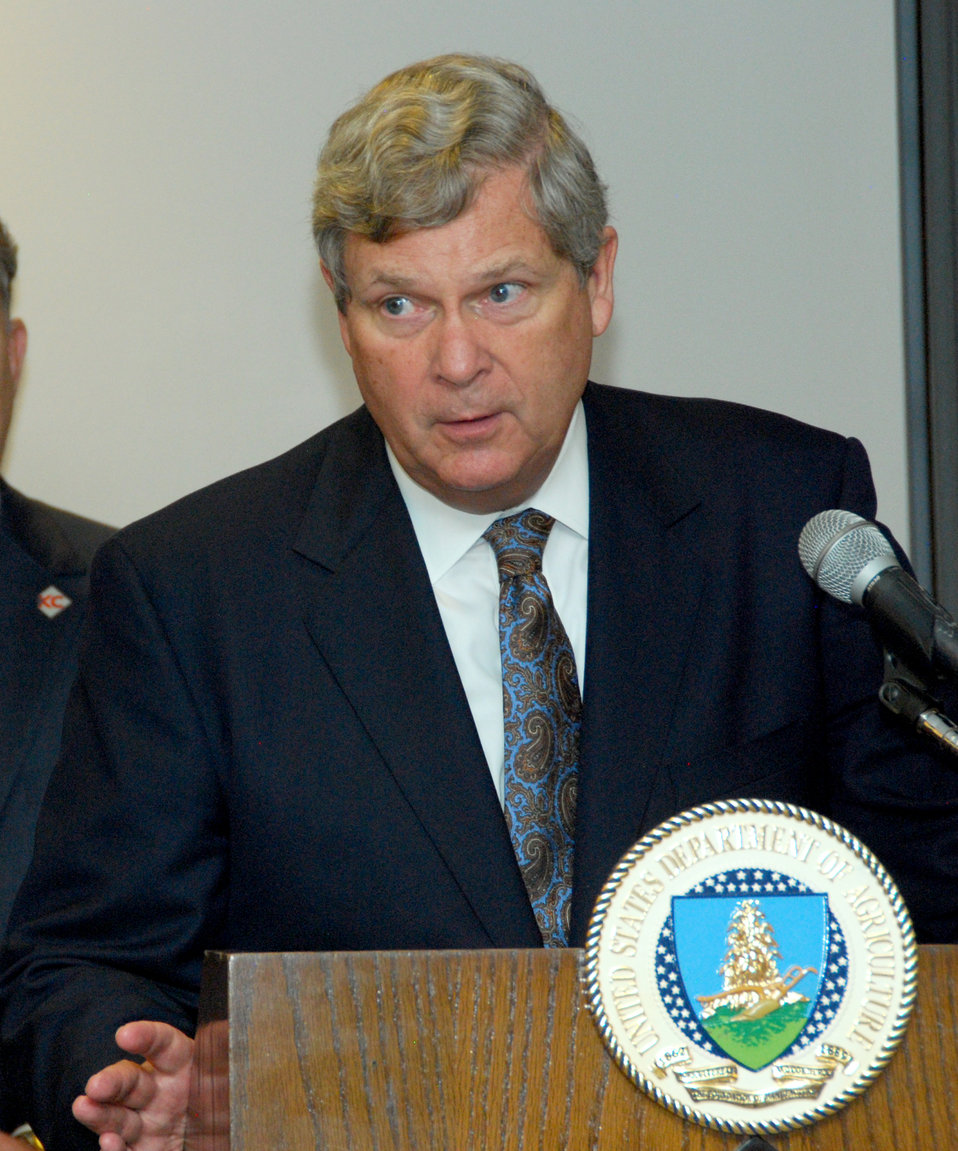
Agriculture Secretary Tom Vilsack makes remarks at the American Royal & Agri-business Council of KC, in Kansas City, MO., on Friday, June 21, 2013.